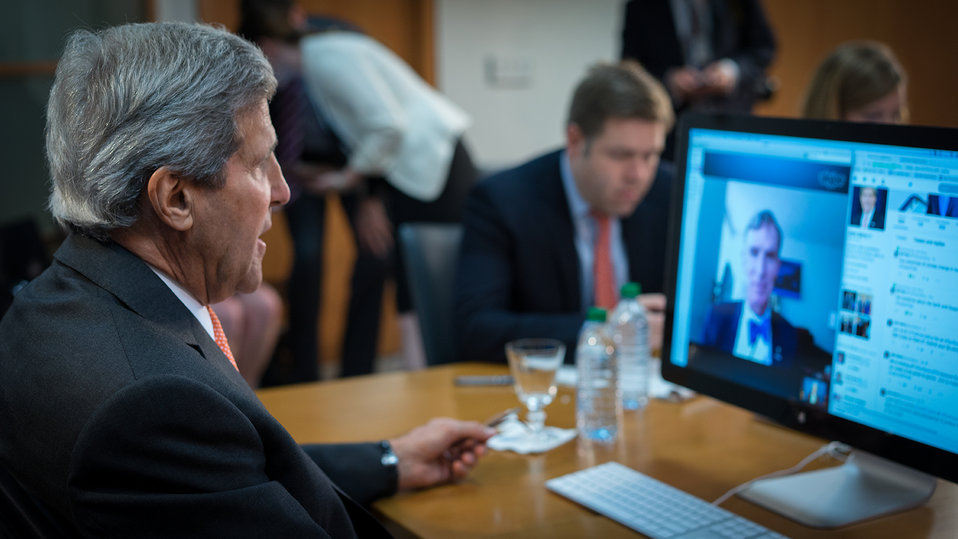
Secretary Kerry Participates in a Twitter QandA with Bill Nye

U.S. Secretary of State John Kerry participates in a Twitter Q&A with Bill Nye the Science Guy during the Our Ocean Conference on June 17, 2014.